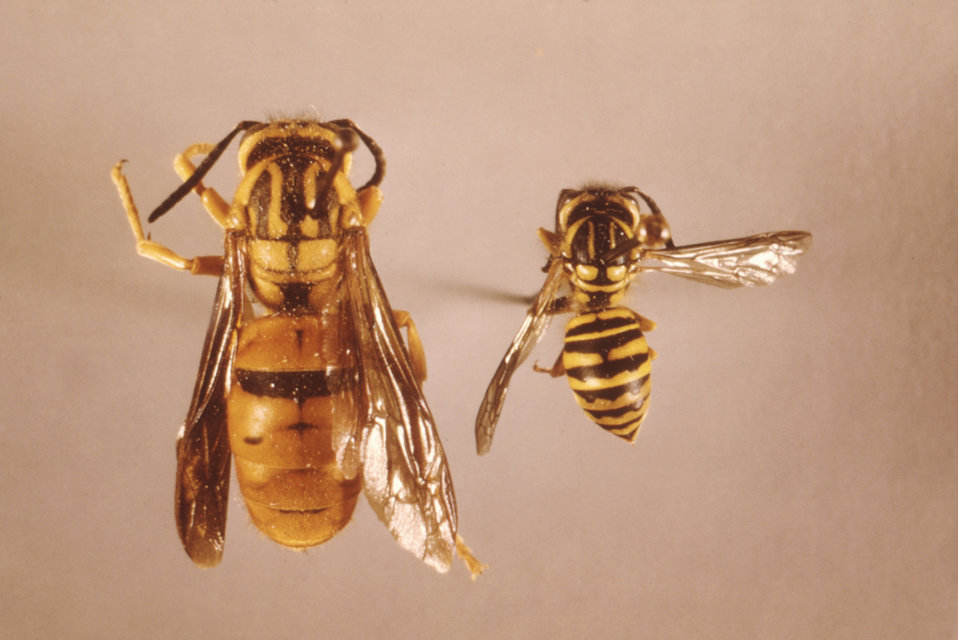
These are two Southern yellow jackets, Vespula squamosa, a queen (Lt) and a worker (Rt).